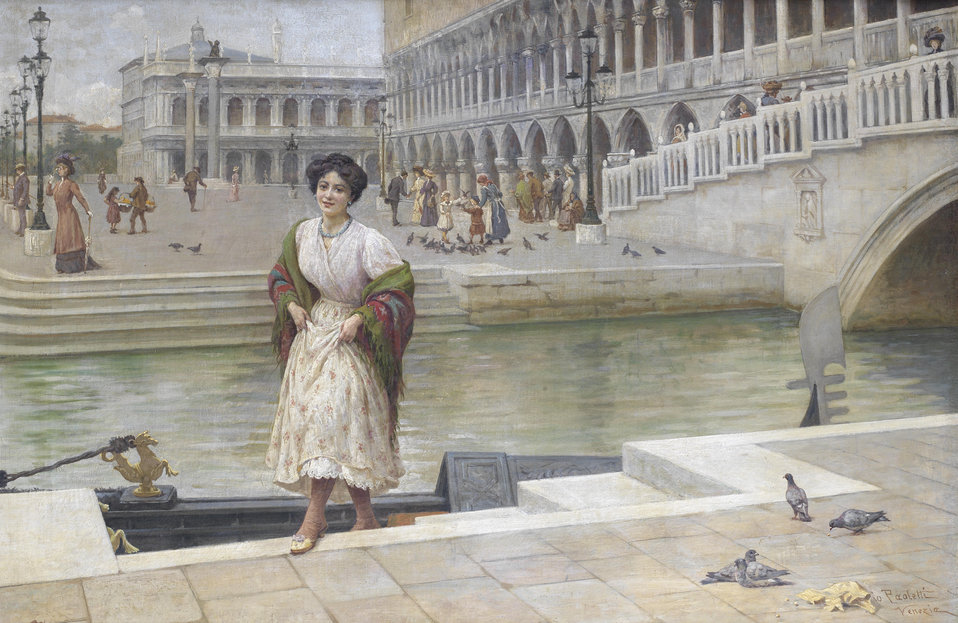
Antonio Ermolao Paoletti A Venetian beauty